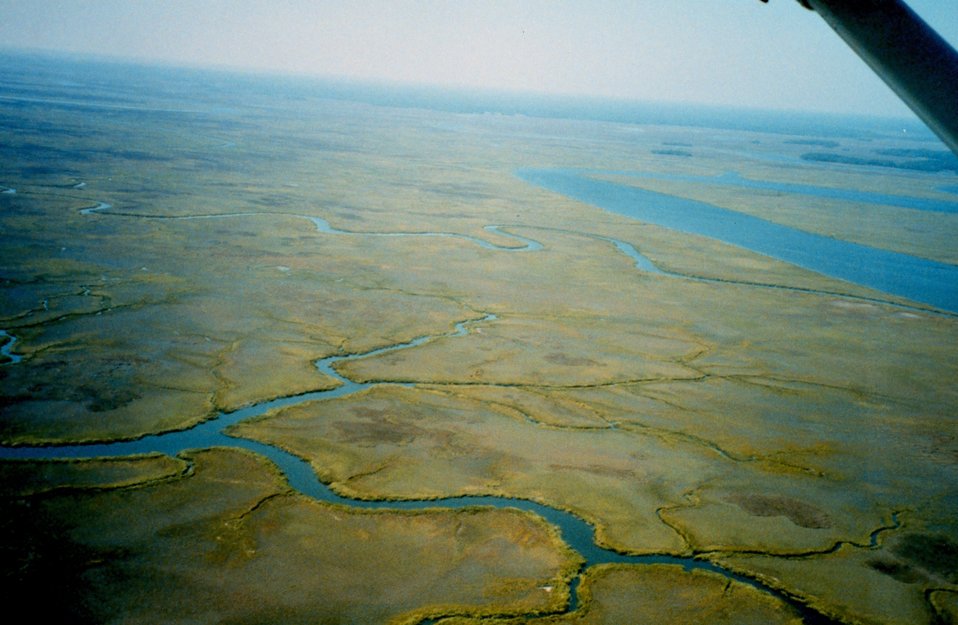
Wetlands with tidal streams